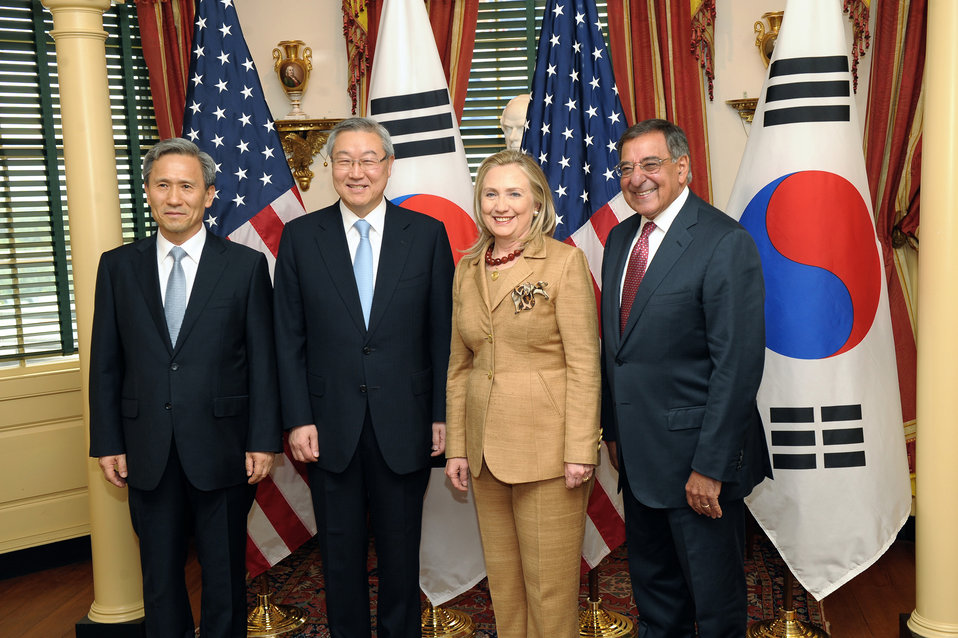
Secretary Clinton Delivers Remarks at the U.S.-Korea Ministerial Dialogue 2 2

Secretary Clinton poses fr a photo with Secretary of Defense Leon Panetta, Minister of Foreign Affairs and Trade of the Republic of Korea Kim Sung-Hwan, and Minister of National Defense of the Republic of Korea Kwan-Jin after the U.S.-Korea ministerial dialogue 2 2 meeting at the U.S. Department of State in Washington, D.C. on June 14, 2012.